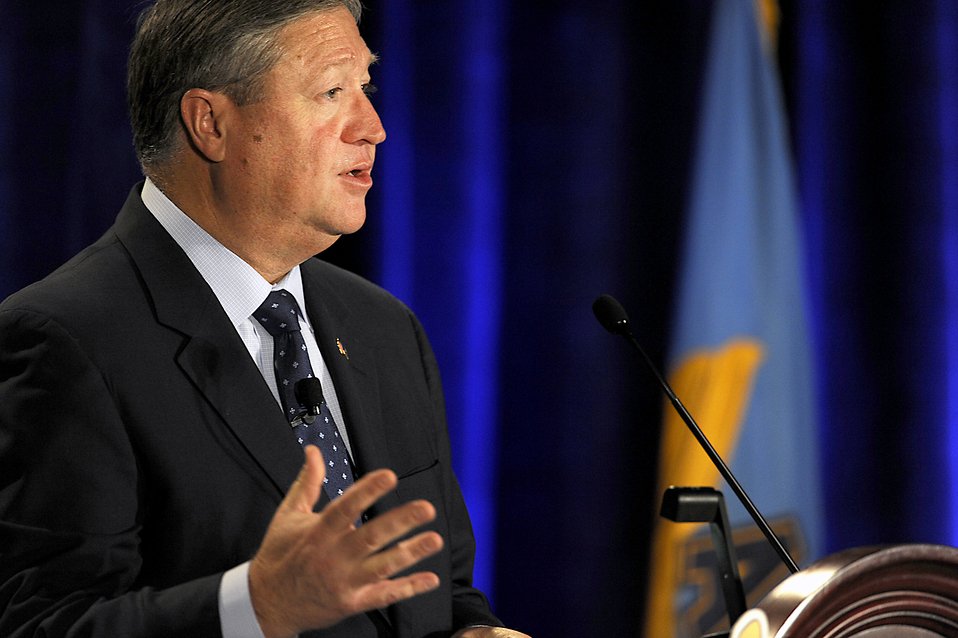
SecAF: Cyberspace is an Air Force priority

Secretary of the Air Force Michael Donley addresses audience questions about Air Force cyber policy March 23, 2012, during the Air Force Association's 2012 CyberFutures Conference and Technology Exposition at National Harbor, Md.